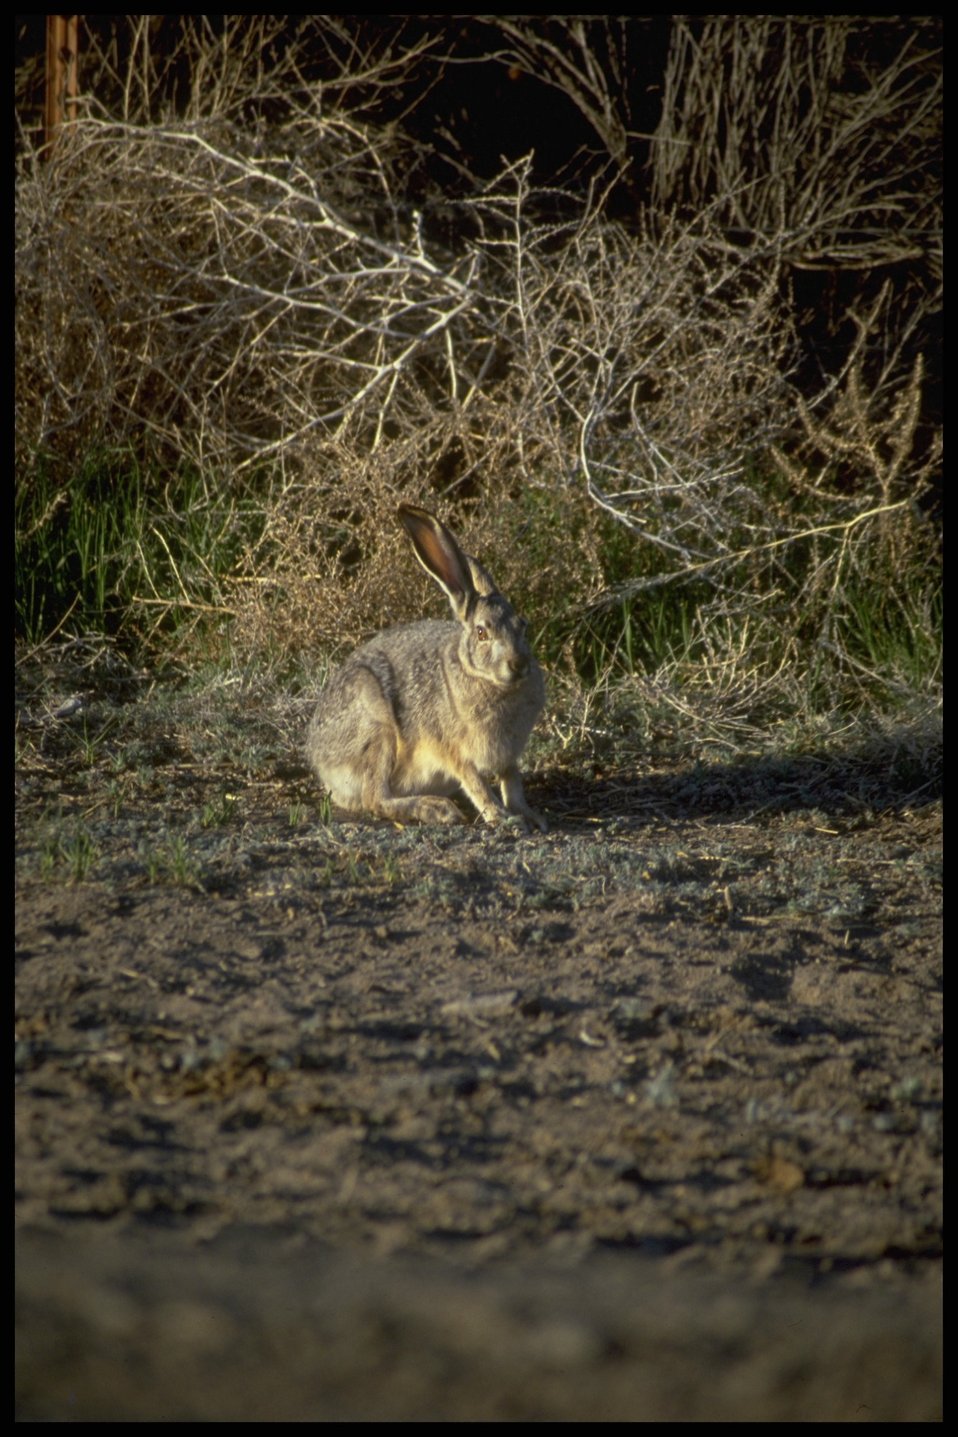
Far shot of hare, Lakeview District.